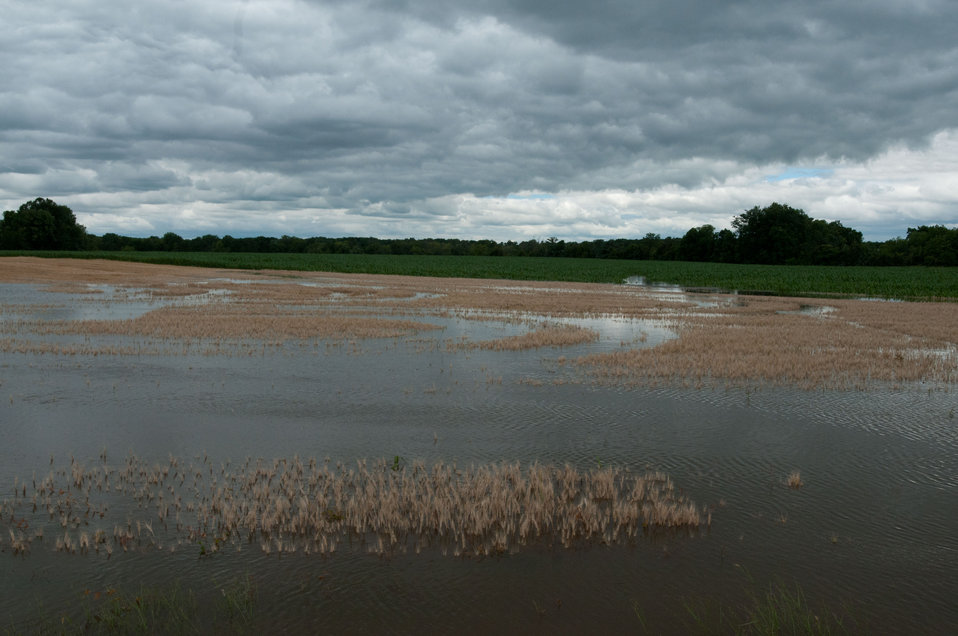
To save crops that threatened by Mississippi River floodwaters farmers harvested wheat two weeks early from the Yazoo River area of MS near Yazoo City, MS, on Monday, May 16. 2011.